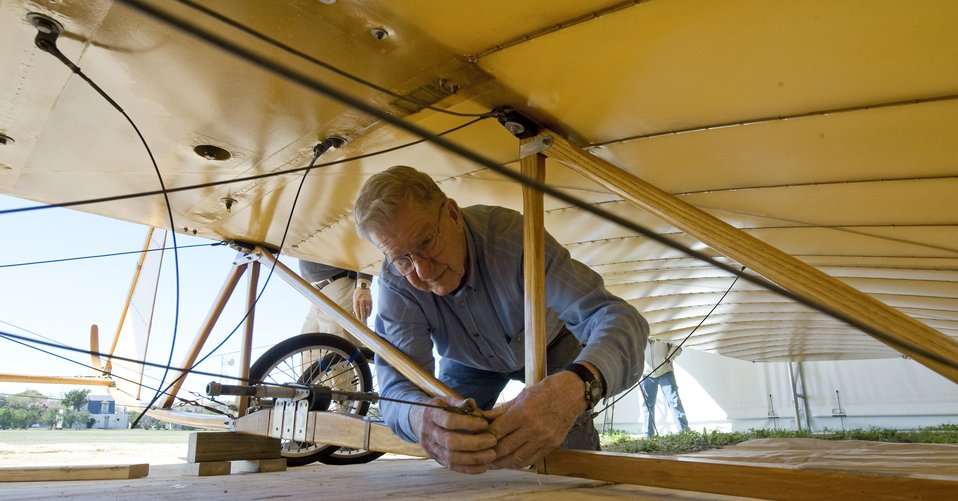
Wright

Bathed in yellow light shining through fabric-covered wings of a Wright